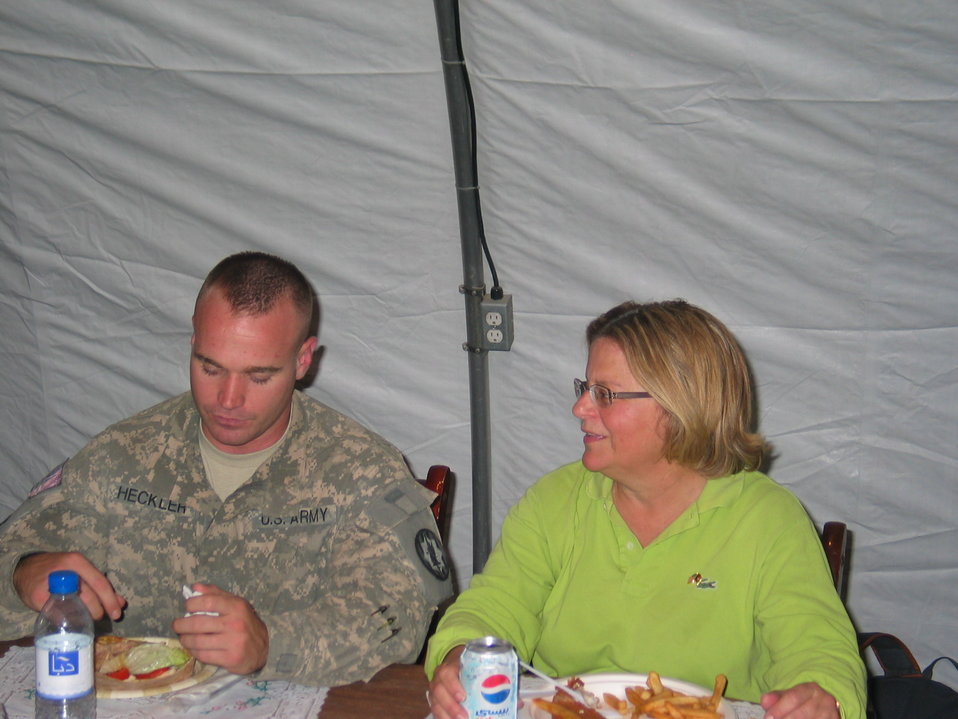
CODEL Berman